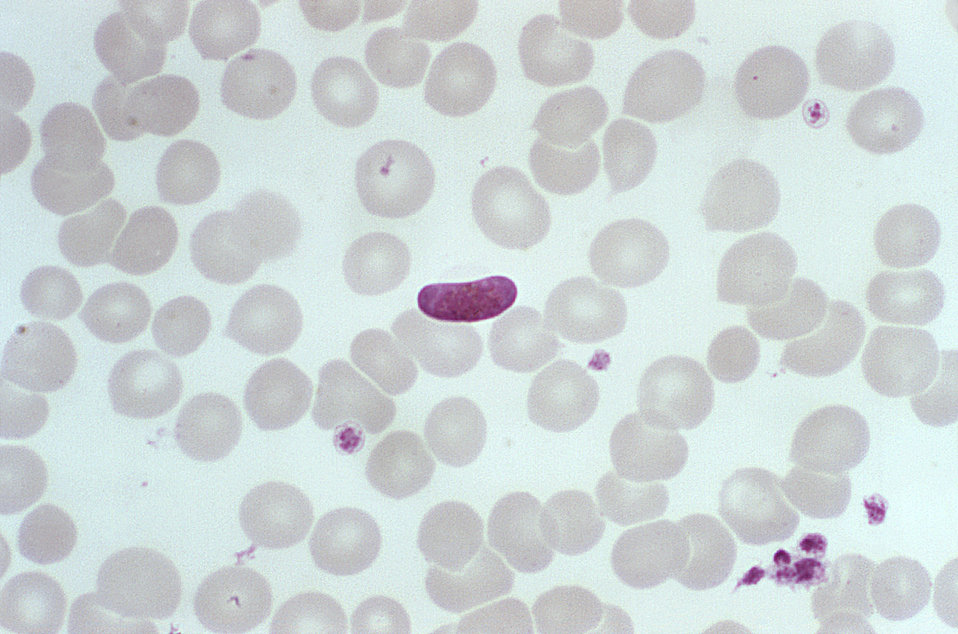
This photomicrograph of a blood smear contains a microgametocyte of the parasite Plasmodium falciparum.